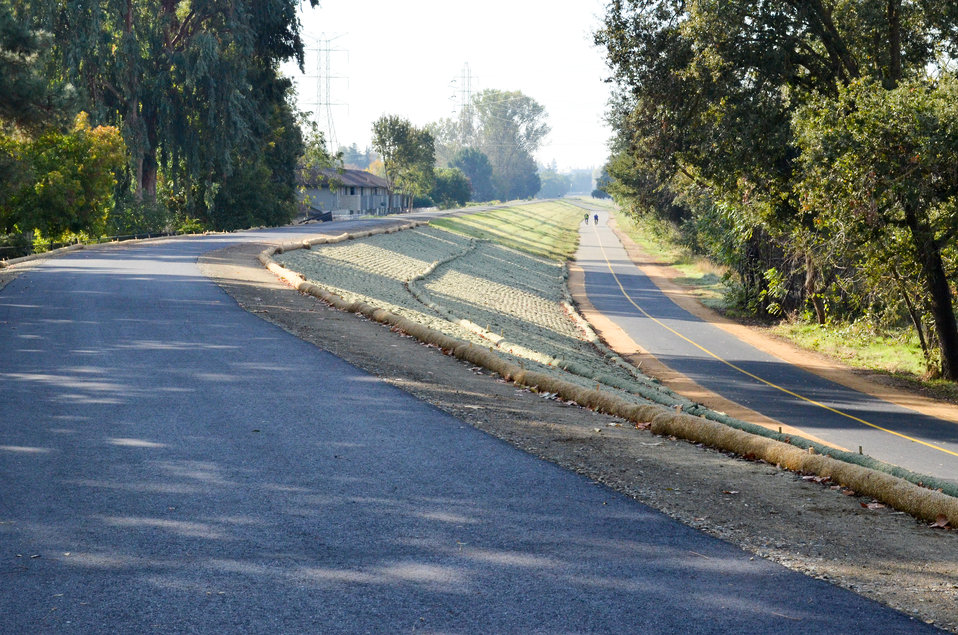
Nov. 9, 2011 American River Parkway Trail near the California State University-Sacramento campus

The U.S. Army Corps of Engineers Sacramento District finished a levee improvement project Oct. 31, 2011 along the American River Parkway Trail near the California State University-Sacramento campus, shown Nov. 9, 2011. Funded by the American Recovery and Reinvestment Act of 2009, the $2.2 million project installed a seepage cutoff wall in a 162-foot-long stretch of levee at the west end of Northrop Avenue. Construction on another levee improvement site nearby is scheduled to begin spring 2012.